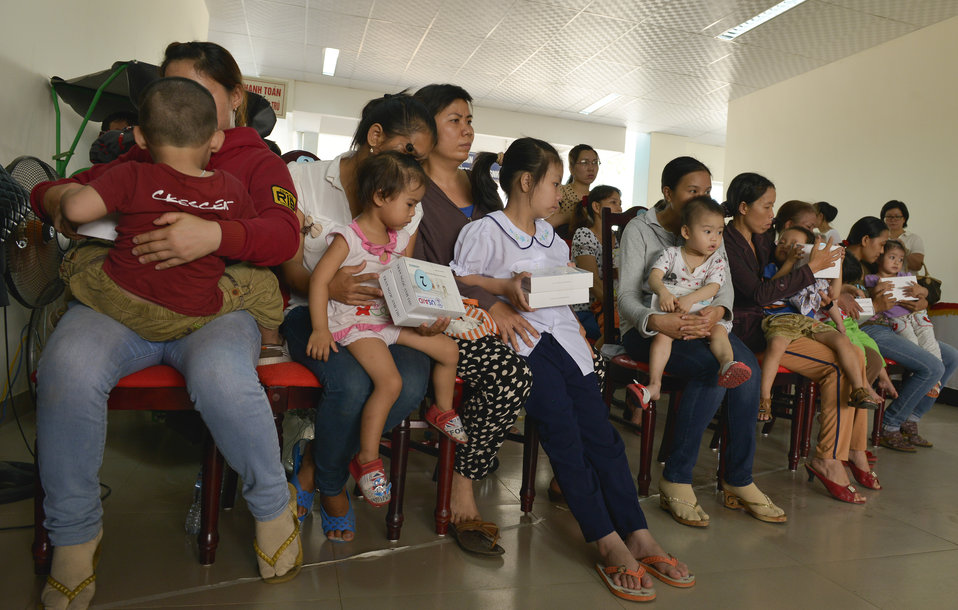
U.S. Congressional delegation attends a wheelchairs and hearing aids distribution event in Danang

Hoa Vang District Hospital, Danang, April 19, 2014.